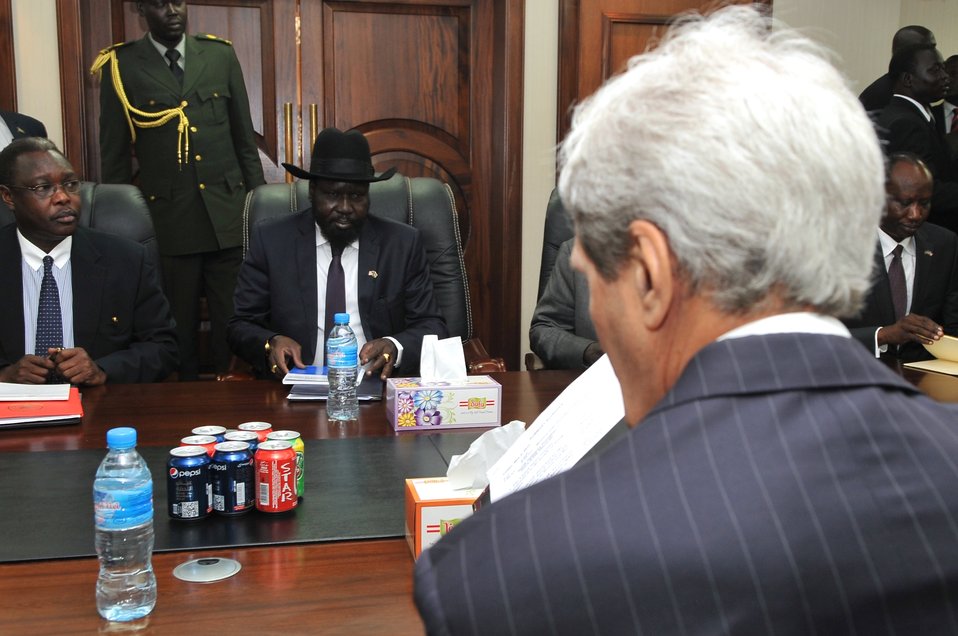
Secretary Kerry, South Sudanese President Kiir Look Over Notes Before Meeting in Juba

U.S. Secretary of State John Kerry and South Sudanese President Salva Kiir Mayardit look over their respective notes at the outset of a meeting in Juba on May 2, 2014.